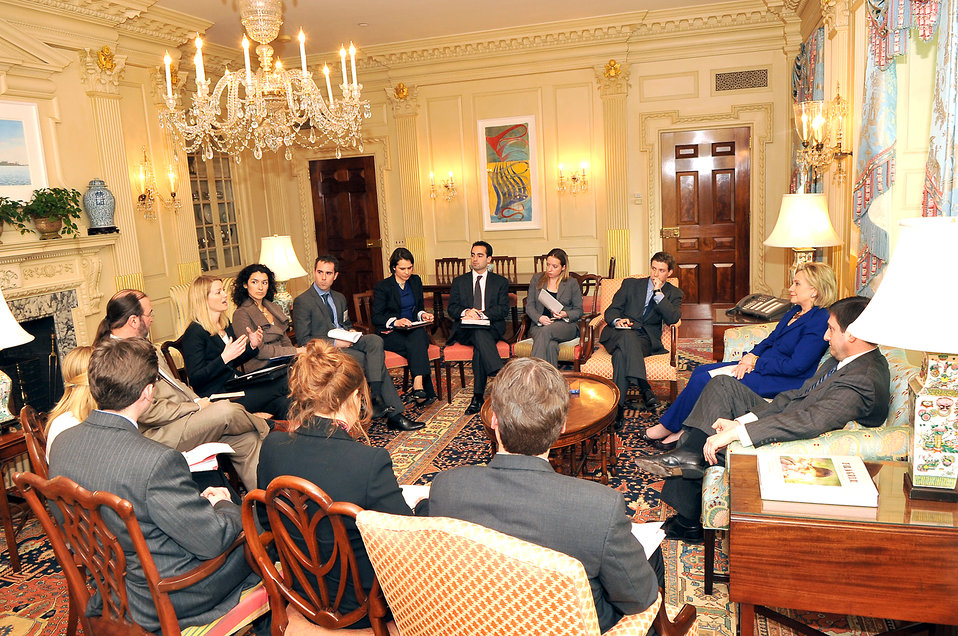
Secretary Meets With New Media Team

U.S. Secretary of State Hillary Rodham Clinton meets with members of the new media team at the U.S. Department of State, Washington, D.C., March 11, 2010.